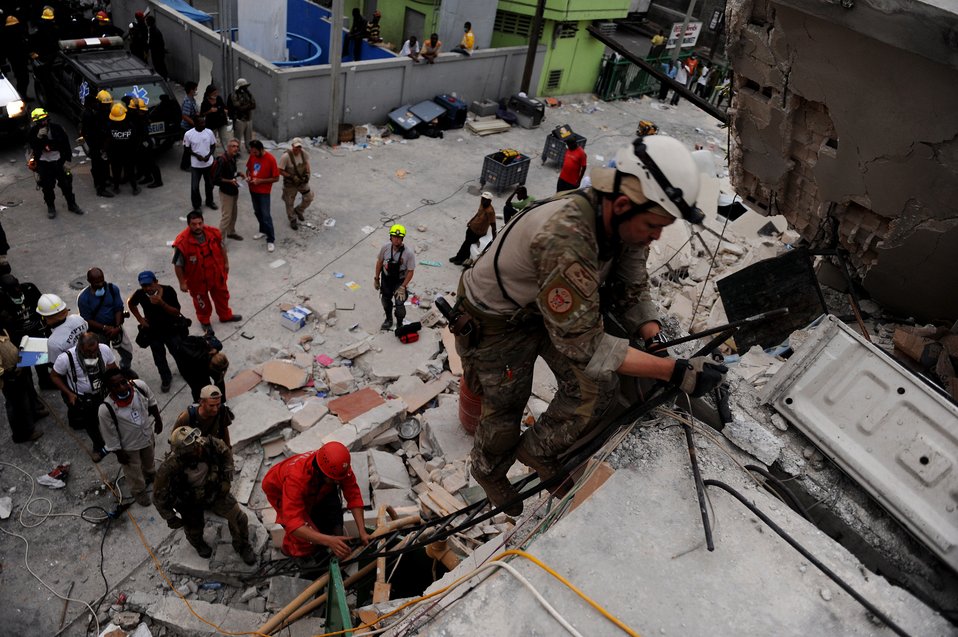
AFSOC pararescuemen work to save lives

A U.S. Air Force pararescueman from the 23rd Special Tactics Squadron, Hurlburt Field, Fla., and members of various rescue teams climb a ladder in Port-au-Prince, Haiti, Jan. 19, 2010, to get to a 25-year-old Haitian woman who has been trapped for seven days in a space in a collapsed building.